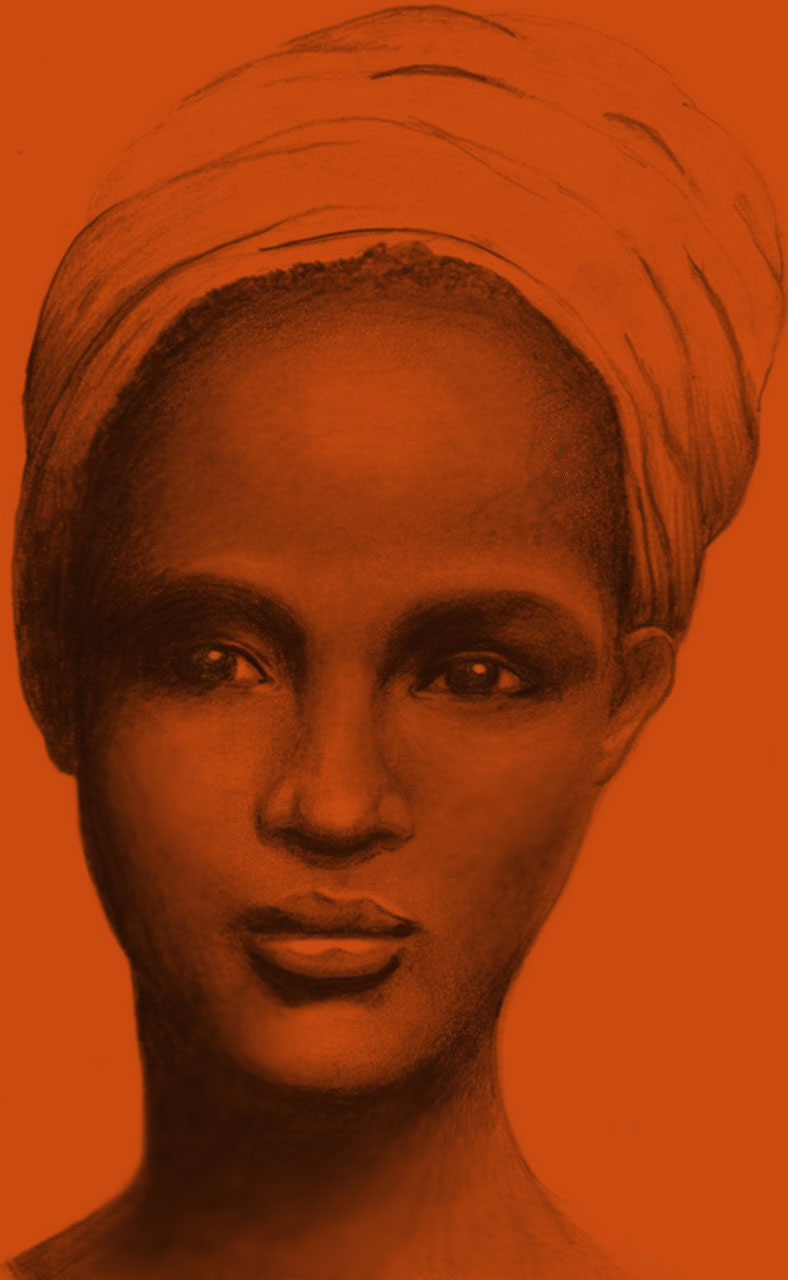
African lady with headscarf.